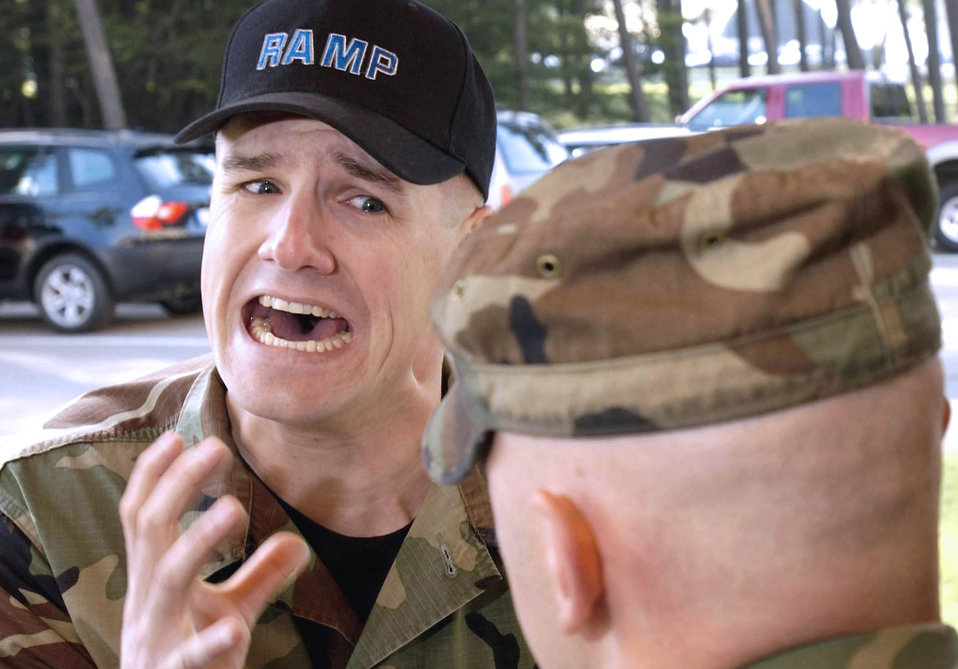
There's no quitting in the Air Force

RAMSTEIN AIR BASE, Germany -- Staff Sgt. Mike Bowles struggles to understand a candidate during inprocessing at Ramstein's Area Motivational Program. This 30-day program is used by commanders to